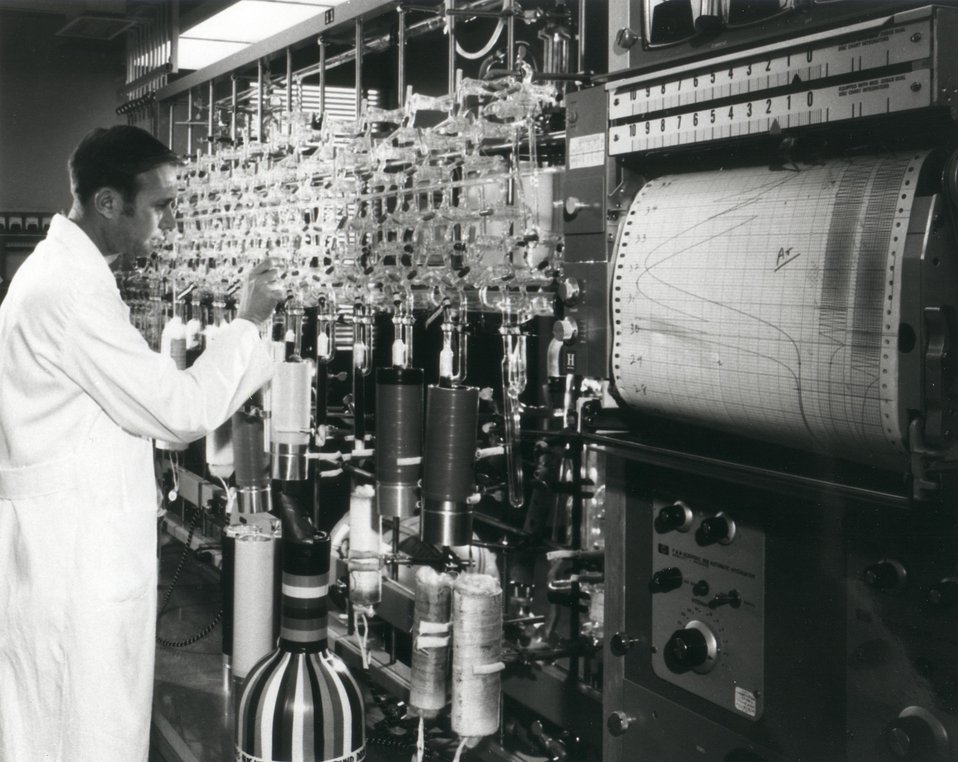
The presence of radionuclides in the Gasbuggy samples and their levels of activity are recorded on the chart of an ionization counter in the Radio chemistry Laboratory at Lawrence Radiation Laboratory, livermore. Dr. Floyd Momyer, head of the Gas Analysis Group is in charge of analyzing the amounts and types of radionuclides present in the samples taken from the underground chimney created by the Gasbuggy detonation December 10, 1967. Circa 1968.